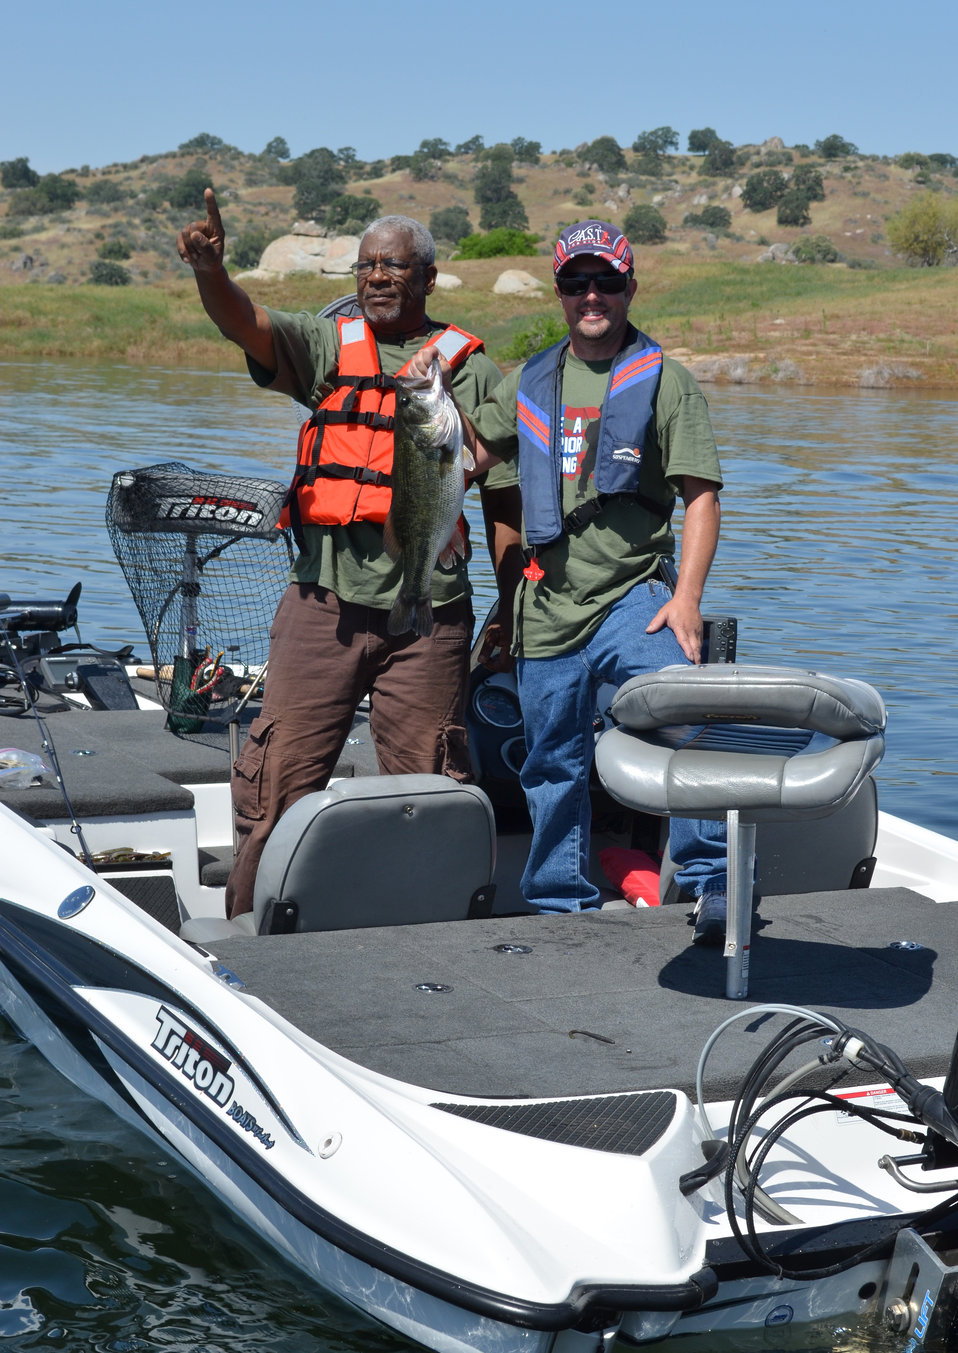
'Take a Warrior Fishing' event at Eastman Lake

A veteran and a local volunteer showoff their catch during the 'Take a Warrior Fishing' event at Eastman Lake, Calif., May 12, 2012. The event was the first of its kind for the U.S. Army Corps of Engineers Sacramento District.